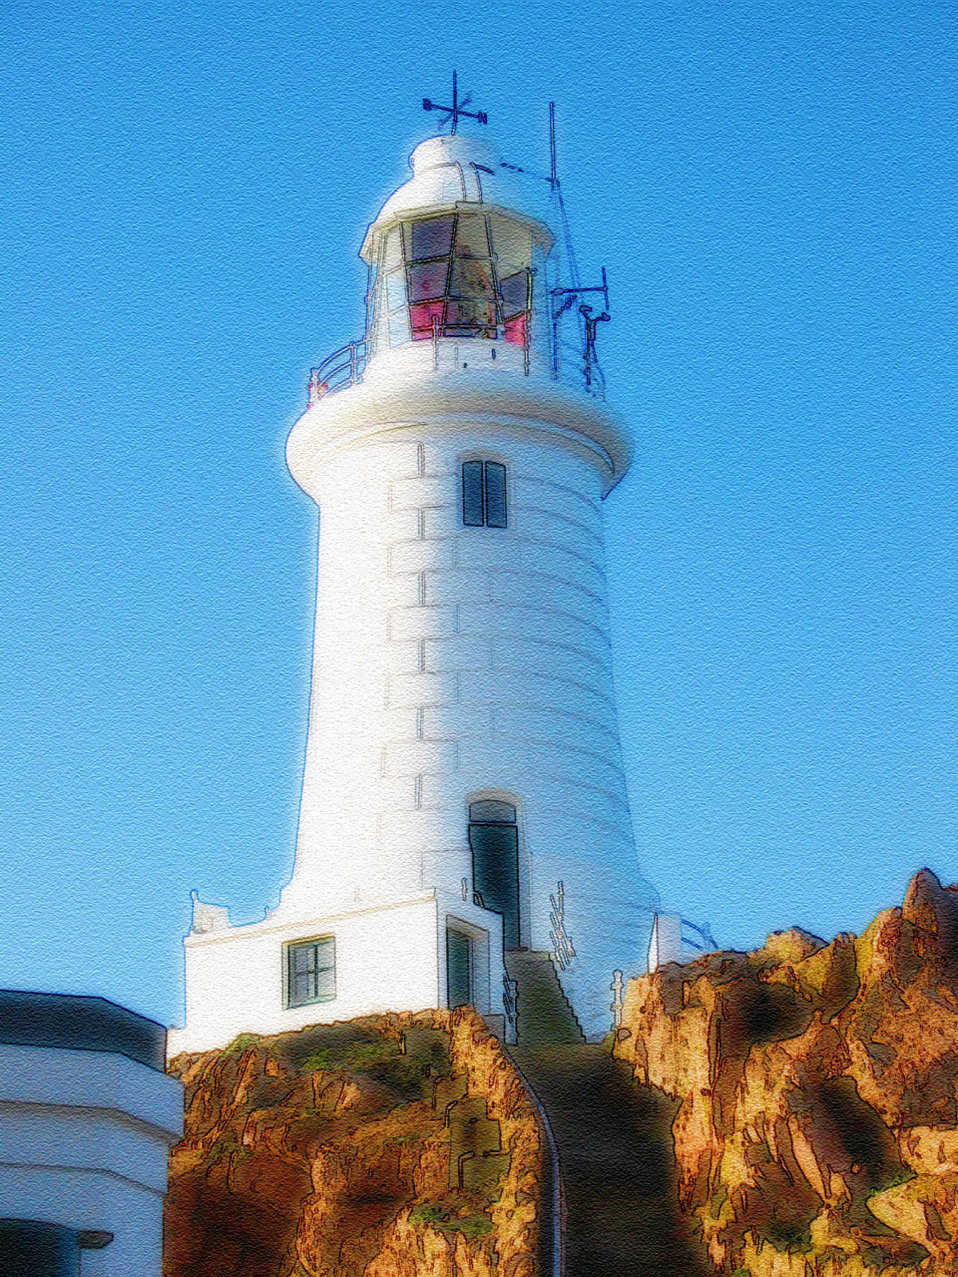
La corbiere on south-western point of jersey in st. brelade..